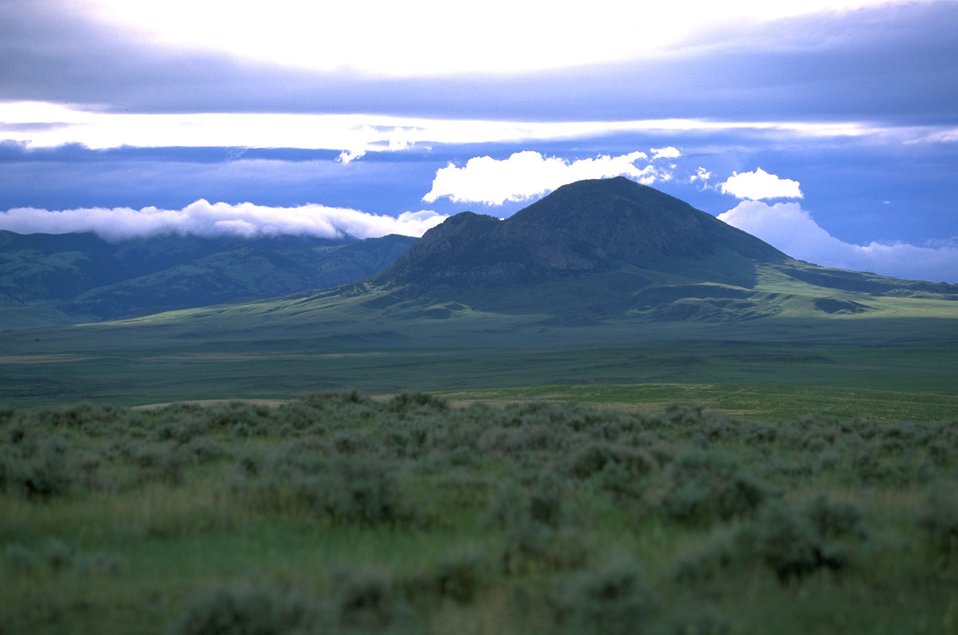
Storm clouds above Black Butte